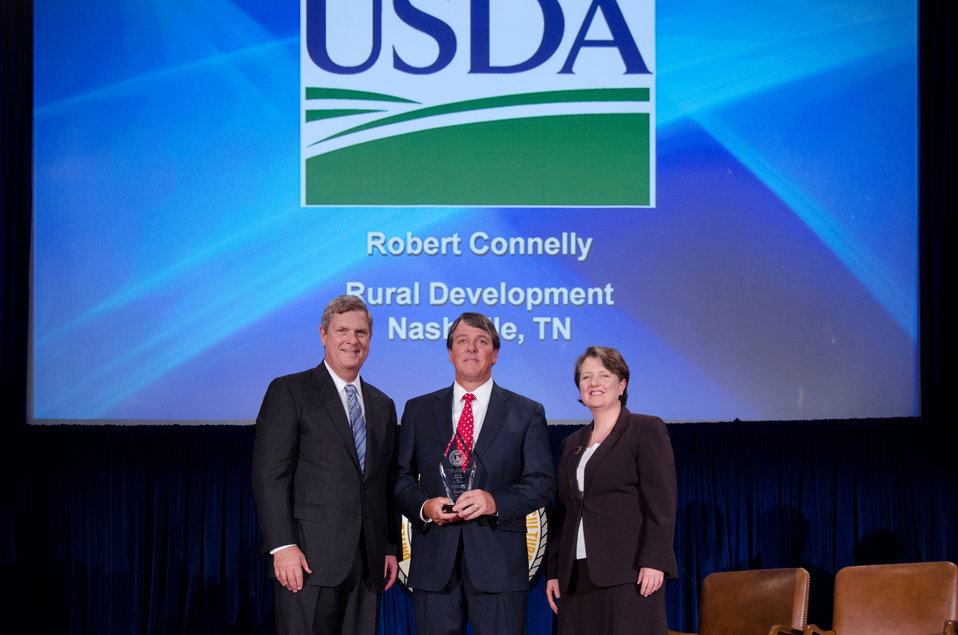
Agriculture Secretary Tom Vilsack (l) and Deputy Secretary Kathleen Merrigan (r), presents the Award for Personal and Professional Excellence to Robert Connelly, Rural Development, Nashville, TN. For management excellence in leading Rural Development to efficiently serving our rural communities. On Wednesday, September 14, 2011 in the Jefferson Auditorium at the US Department of Agriculture in Washington, DC.